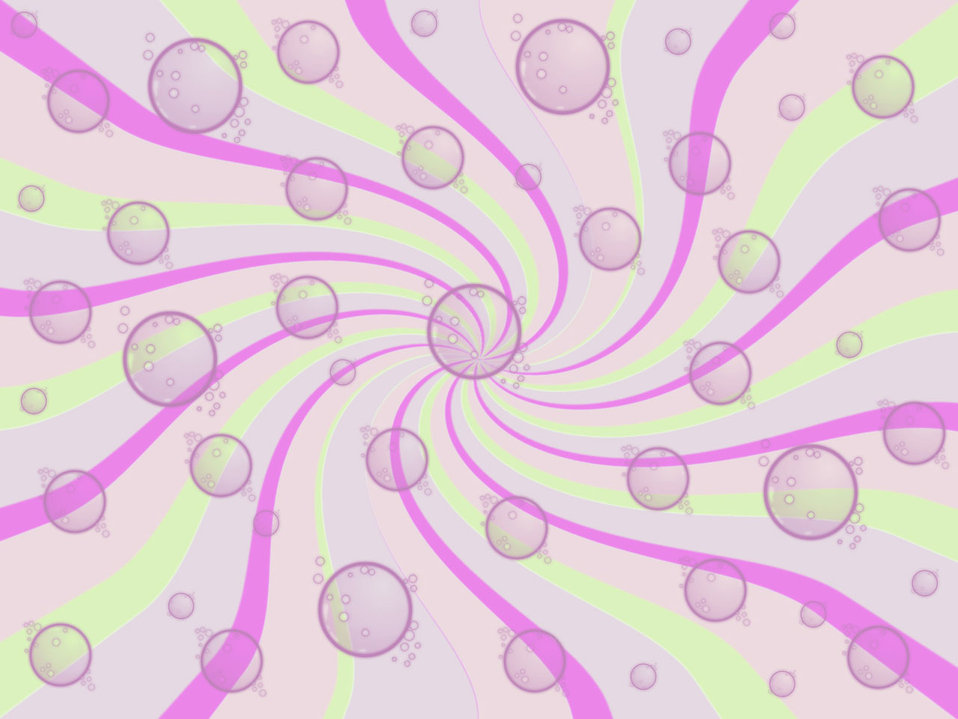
Swirls and bubbles

Pastel swirls and bubbles background..